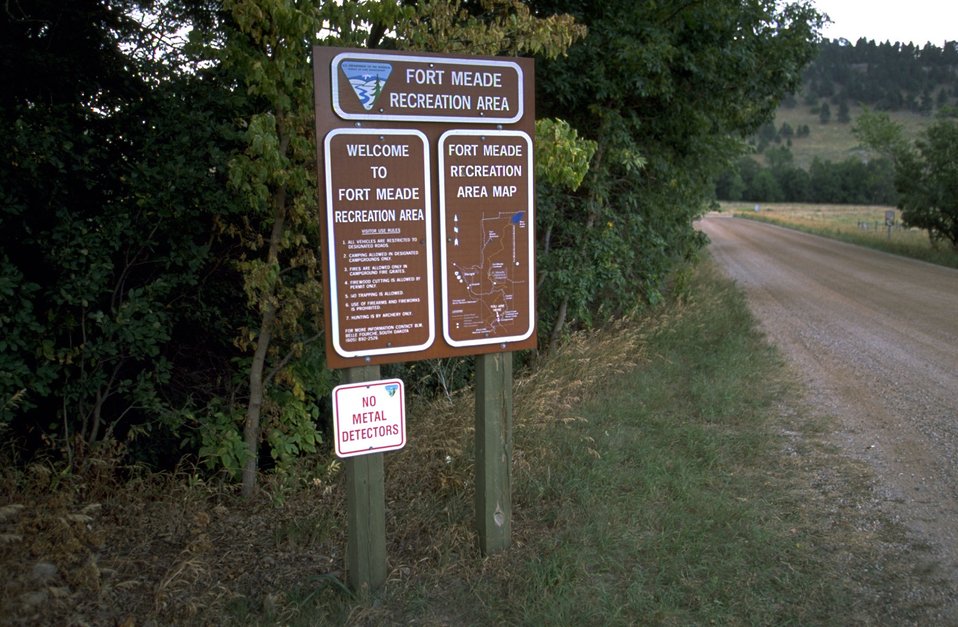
Fort Meade Recreation Area Regulation Sign and Map Sign at Alkali Creek Trailhead